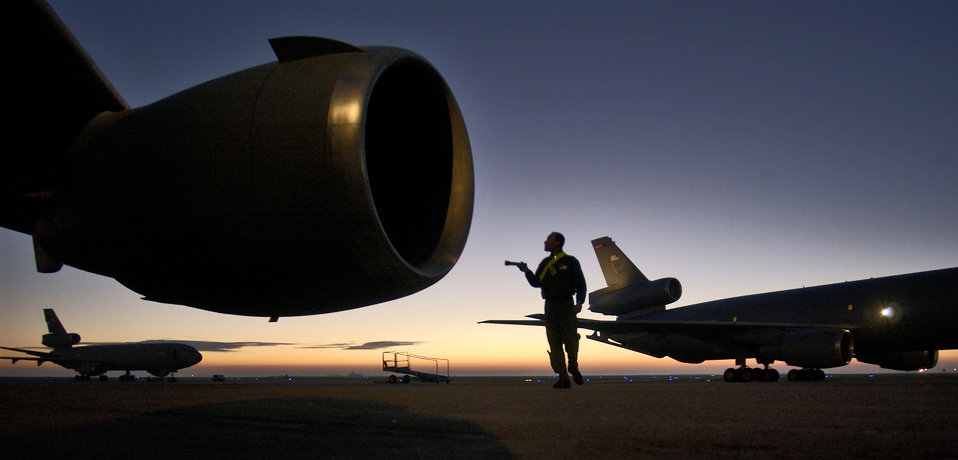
Extending the mission

TRAVIS AIR FORCE BASE, Calif. -- Staff Sgt. Talbert Reese performs a walk-around inspection before an aerial refueling mission from here. He is a KC-10A Extender flight engineer from the 9th Aerial Refueling Squadron.